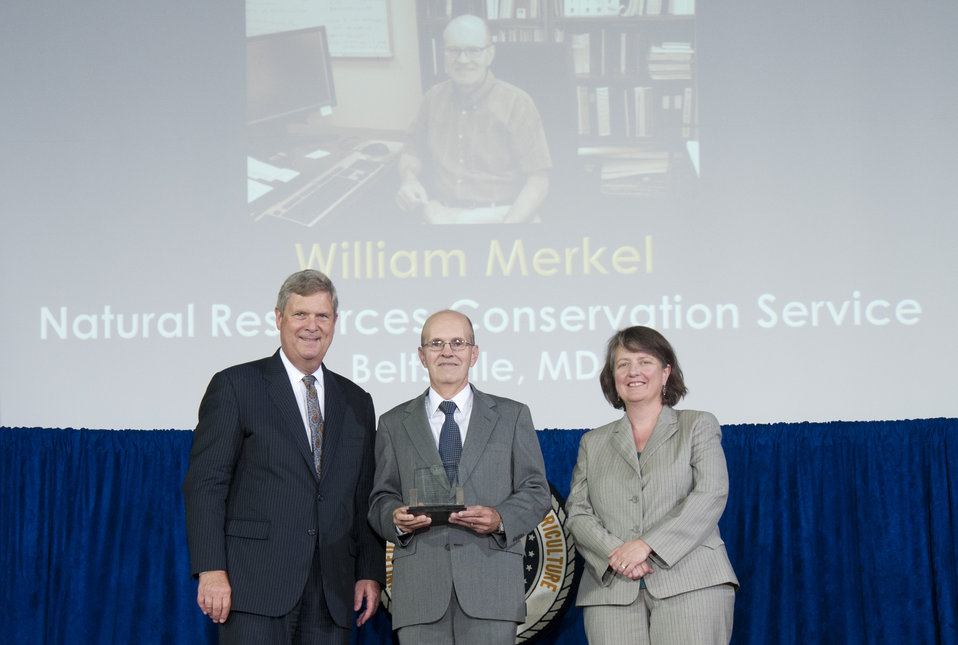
Agriculture Secretary Tom Vilsack and Agriculture Deputy Secretary Kathleen Merrigan present the Secretary’s Honor Award for Personal and Professional Excellence to Natural Resources Conservation Service (NRCS) employee William Merkel at the U.S. Department of Agriculture (USDA) 64th Annual Honor Awards Ceremony in Washington, D.C. on Wednesday, Sept. 12, 2012. Merkel received his award for hard work and dedication supporting and maintaining the WinTr-20 computer program, making it one of the most widely recognized and used hydrology computer programs worldwide.